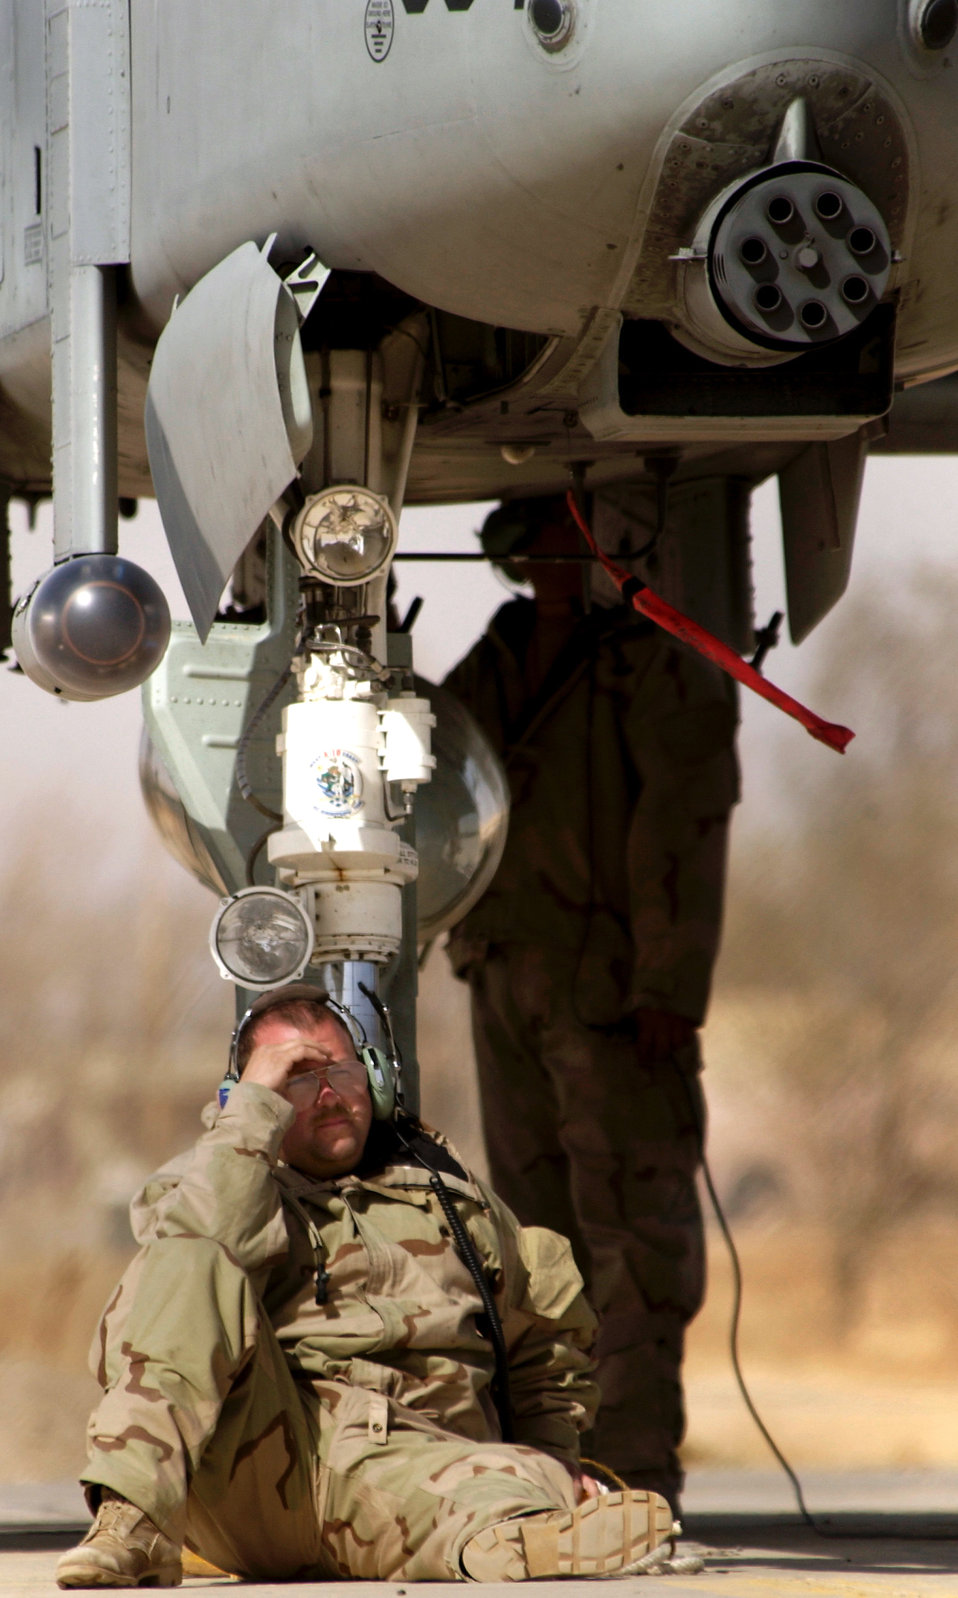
Cool break

OPERATION IRAQI FREEDOM -- An A-10 crew chief tries to cool off before launching his aircraft April 2 at an air base in southern Iraq.